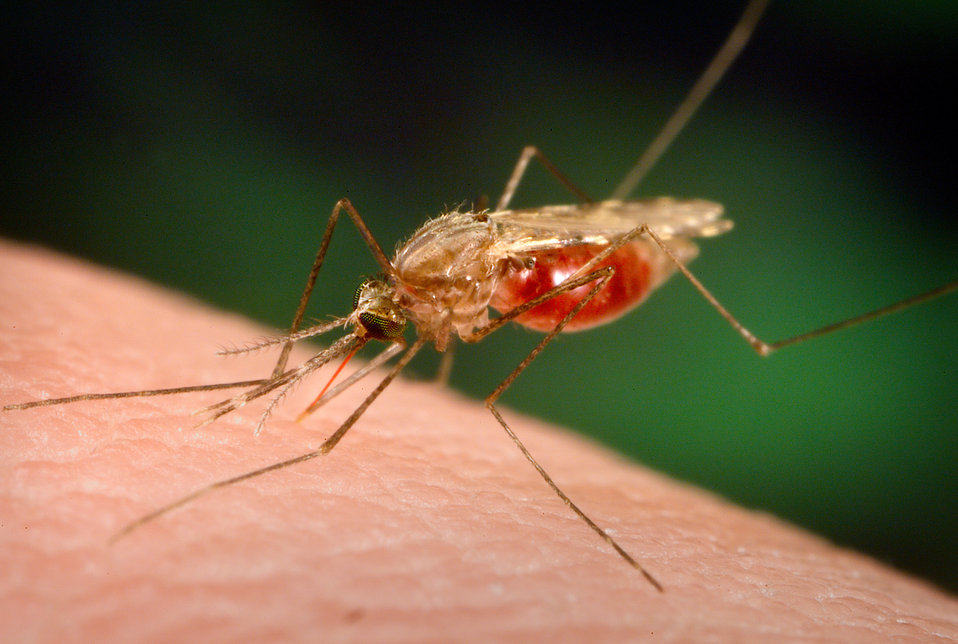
This photograph depicts an Anopheles funestus mosquito partaking in a blood meal from its human host. Note the blood passing through the proboscis, which has penetrated the skin, and entered a miniscule cutaneous blood vessel.